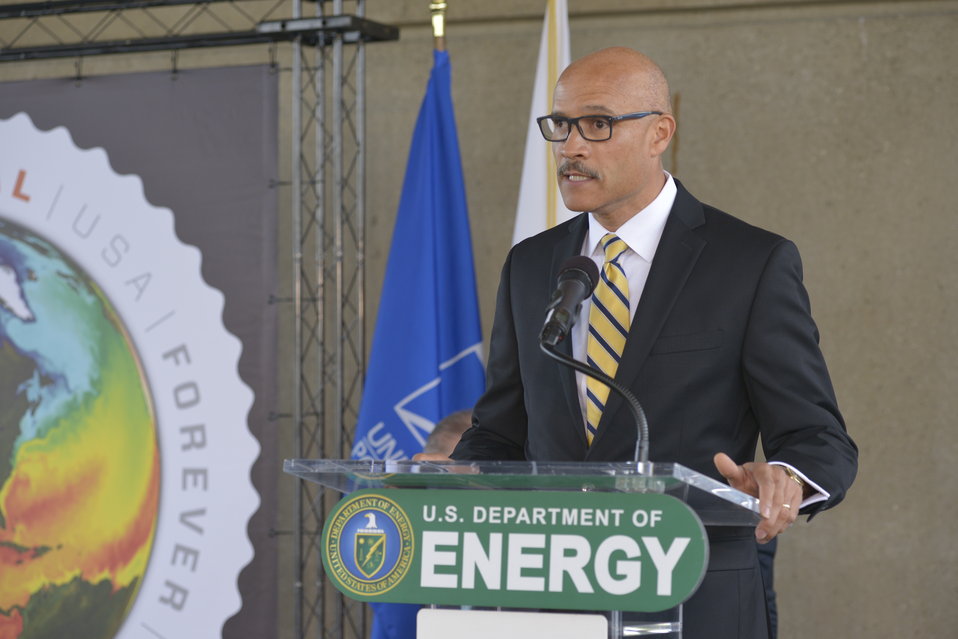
U.S Postal Services introduces a new Global: Sea Surface temperatures forever stamp at the Earth Day program at Department of Energy on April 22, 2014. ( T.Day, C.Williams, C.Anderson II, J.Colin Ph.D, Dr. K. Sullivan, K.Tobin Ph.D, W. Gicher Jr)